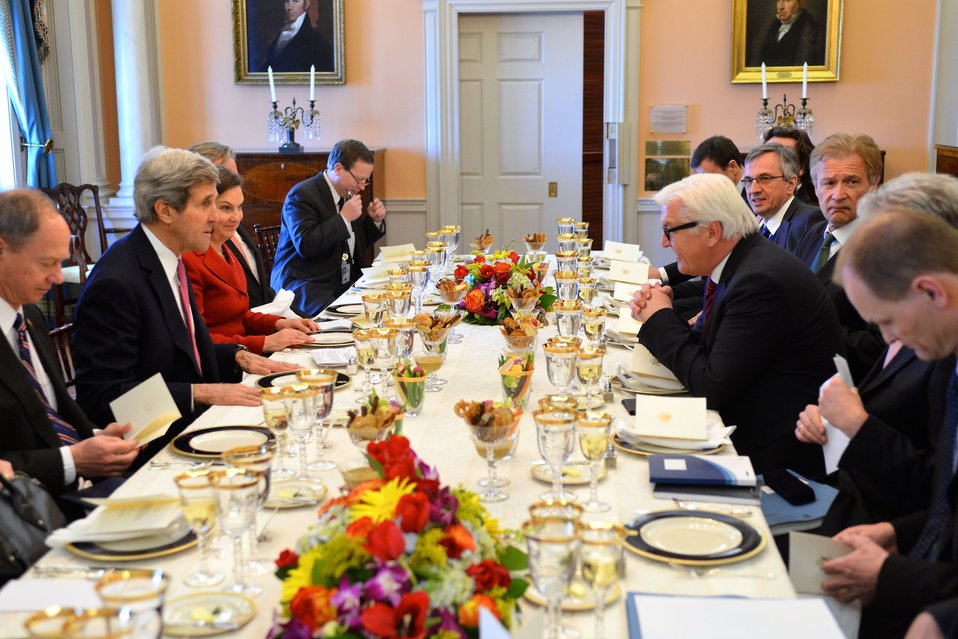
Secretary Kerry Hosts a Working Lunch With Steinmeier

U.S. Secretary of State John Kerry Kerry participates in a working lunch with German Foreign Minister Frank-Walter Steinmeier at the U.S. Department of State in Washington, D.C., on February 27, 2014.